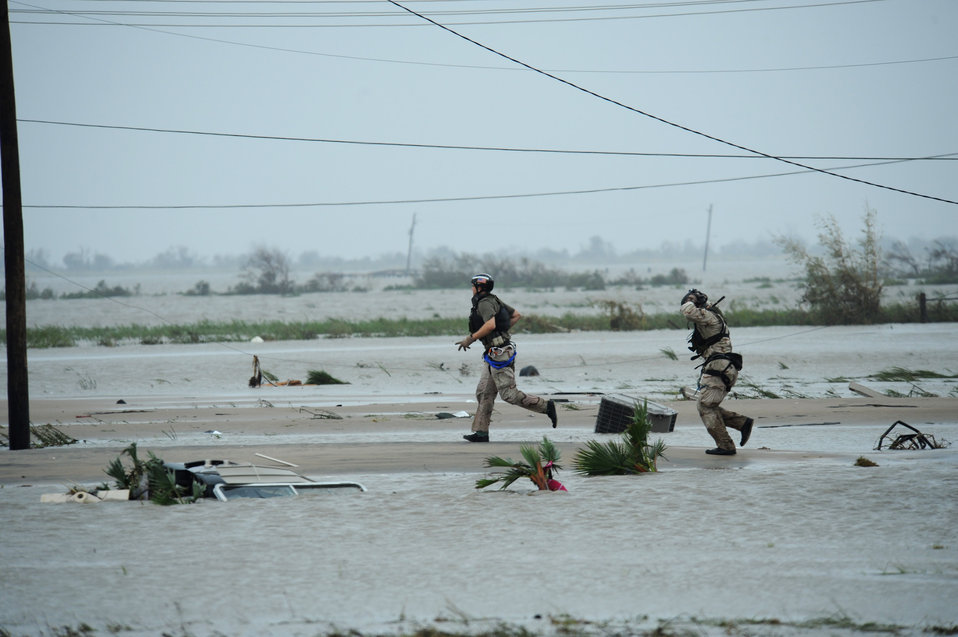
Airmen conduct search, rescue

Senior Airman Brandon Smith (left) and Staff Sgt. Lopaka Mounts conduct search and rescue operations in Galveston, Texas, after Hurricane Ike, Sept. 13. Sergeant Mounts and Airman Smith are both pararescueman assigned to the 331st Air Expeditionary Group at Randolph Air Force Base, Texas.